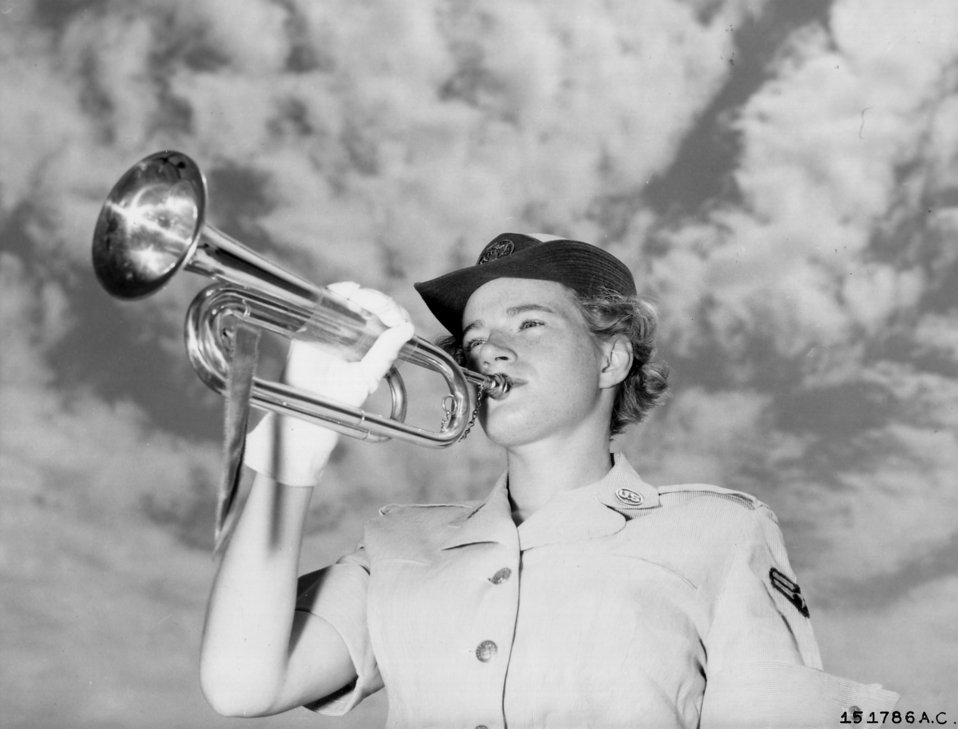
WAF Bugler

1950's -- A/2C Frances E. Courtney furnishes the bugle calls of taps and reveille for the 3452nd Student Squadron (WAF) at Francis E. Warren Air Force Base. It is believed that A/2C Courtney is the only WAF Bugler in the Air Force. 23 June 1953